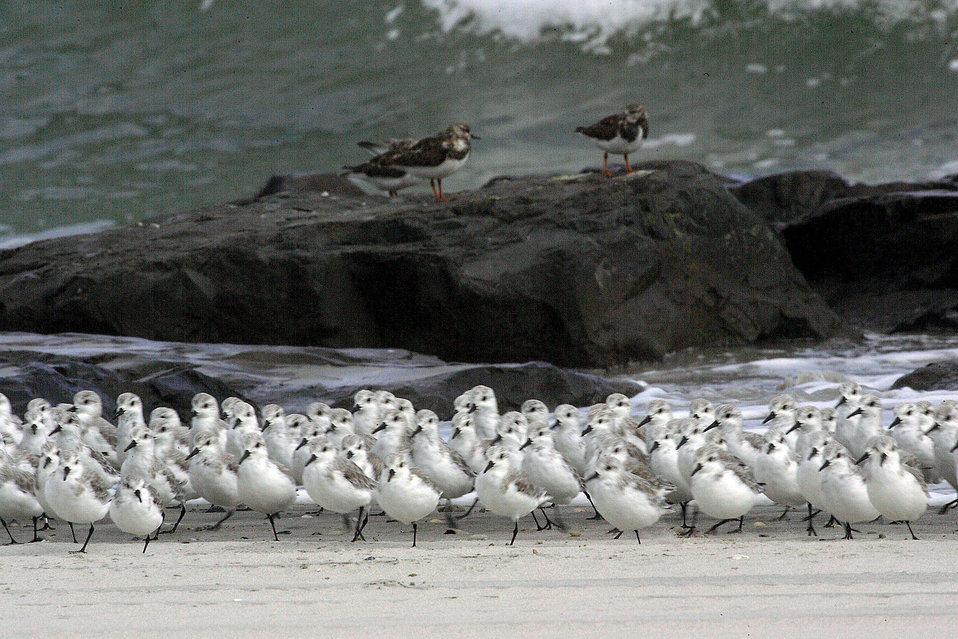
Sanderlings and Ruddy Turnstones

Sanderlings & ruddy turnstones are is just a few of the species at Blackwater National Wildlife Refuge that could be affected by climate change and sea level rise.